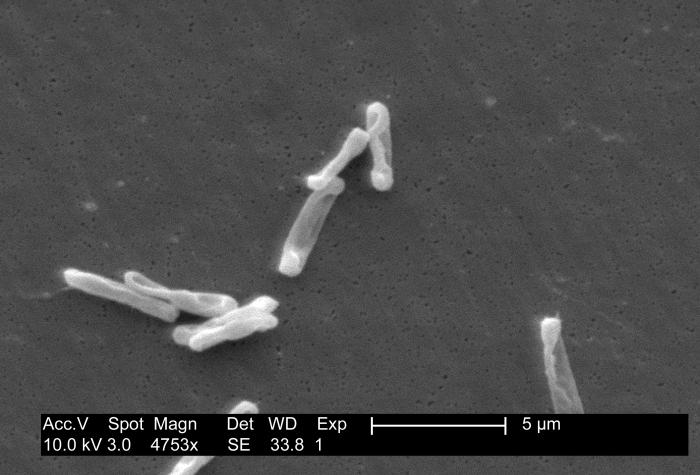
Obtained after an outbreak this micrograph depicts Gram-positive Clostridium difficile bacteria.